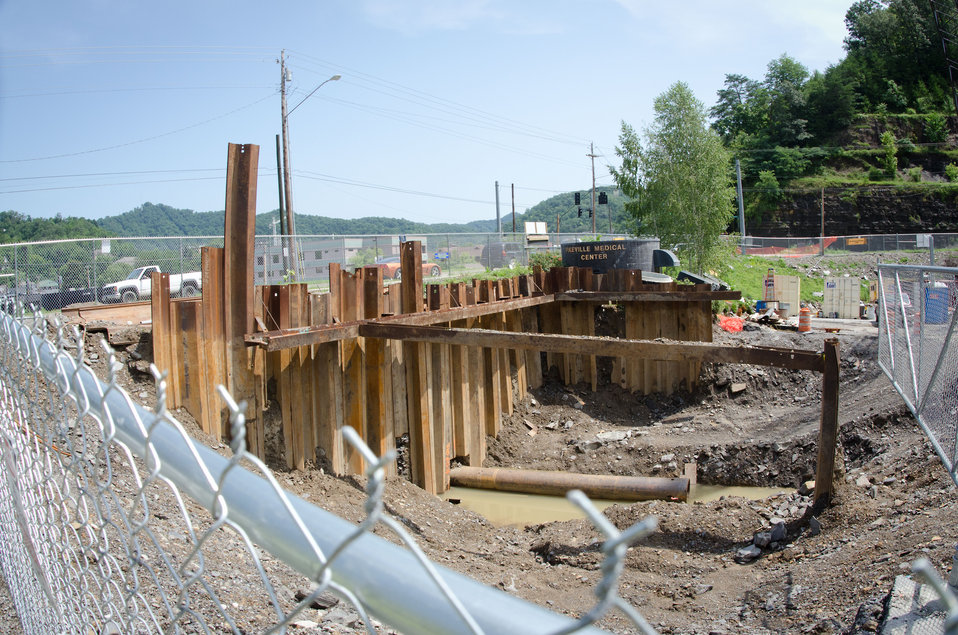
Above ground construction phase of Pikeville Medical Center (PMC) expansion project, on Tuesday, July 12, 2011, in Pikeville, KY. After months of infrastructure construction and rain delays, one of Kentucky’s largest American Recovery and Reinvestment Act (ARRA) projects is under way. The $44.6 million Community Facilities Loan will finance construction of a new medical office building and parking garage.